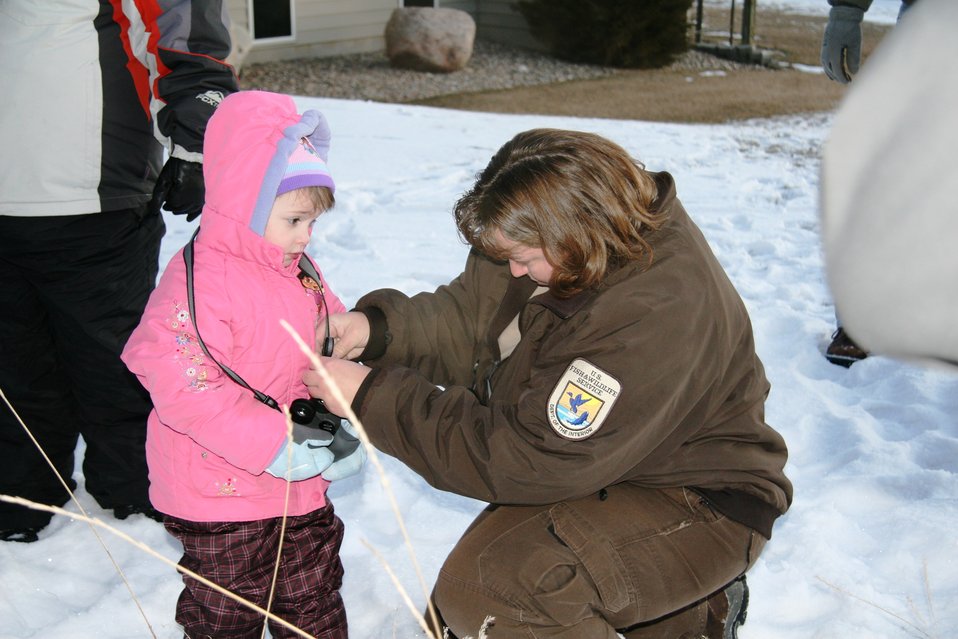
Young Citizen Scientist

USFWS Biologist Jennifer Zorn helps this little birder adjust her binoculars and get ready to hit the trail!